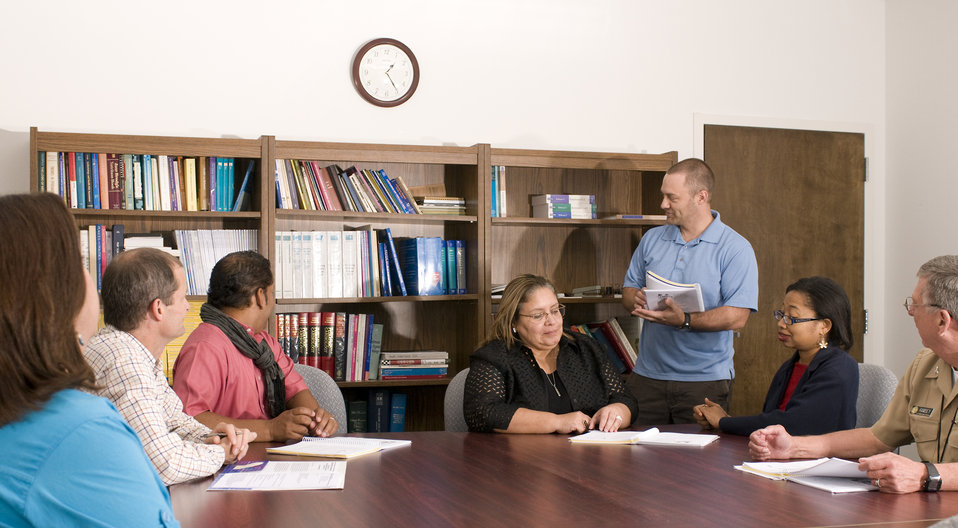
A group of people meeting

This image depicts a group of healthcare workers seated at a table discussing a strategy they would be implementing, which would guide them through an instructional campaign centered on the education of the diabetic patient to the healthy lifestyle one must implement in order to maintain control over the detrimental effects of this disease. One of the attendees had stood up, and was retrieving literature from a bookshelf behind the group at the back of the conference room, to be used to assist in the meeting.